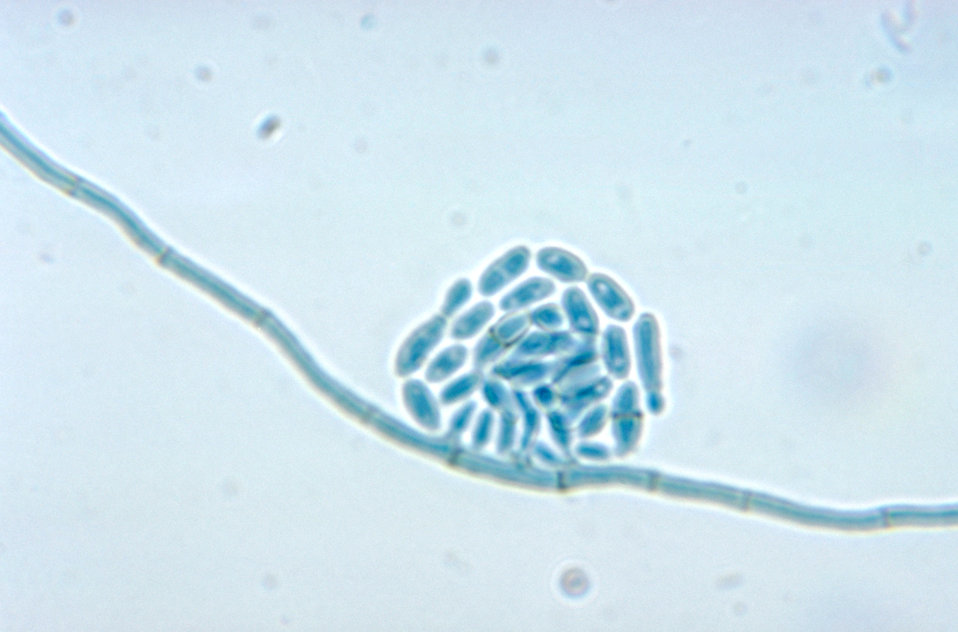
This micrograph reveals a conidiophore and conidia of Hortaea werneckii, formerly Cladosporium werneckii.